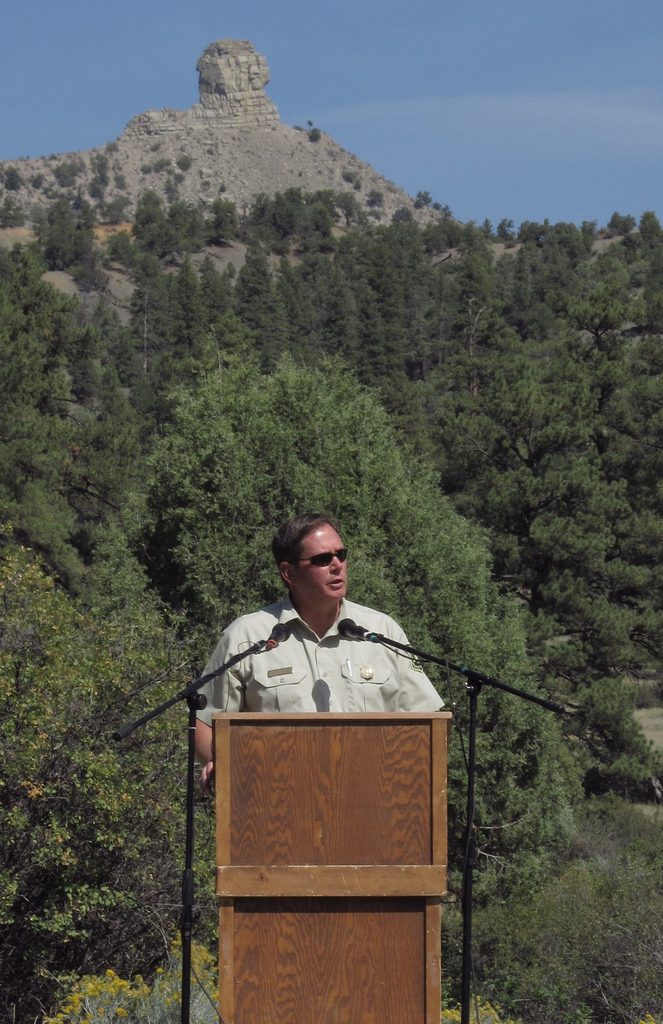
U.S. Department of Agriculture (USDA) Forest Service San Juan National Forest Supervisor Mark Stiles speaks at the dedication of Chimney Rock as a National Monument in the San Juan National Forest in Southwest Colorado on Friday, Sept. 21, 2012. Chimney Rock is of great spiritual importance to Pueblos and other Tribes in the southwest corner of Colorado. With its twin sandstone pillars and its massive Chaco- style masonry walls perched 1,000 feet above the Piedra River Valley the monument protects a landscape important to the continuation of traditional cultural practices of the modern Puebloan Indians.